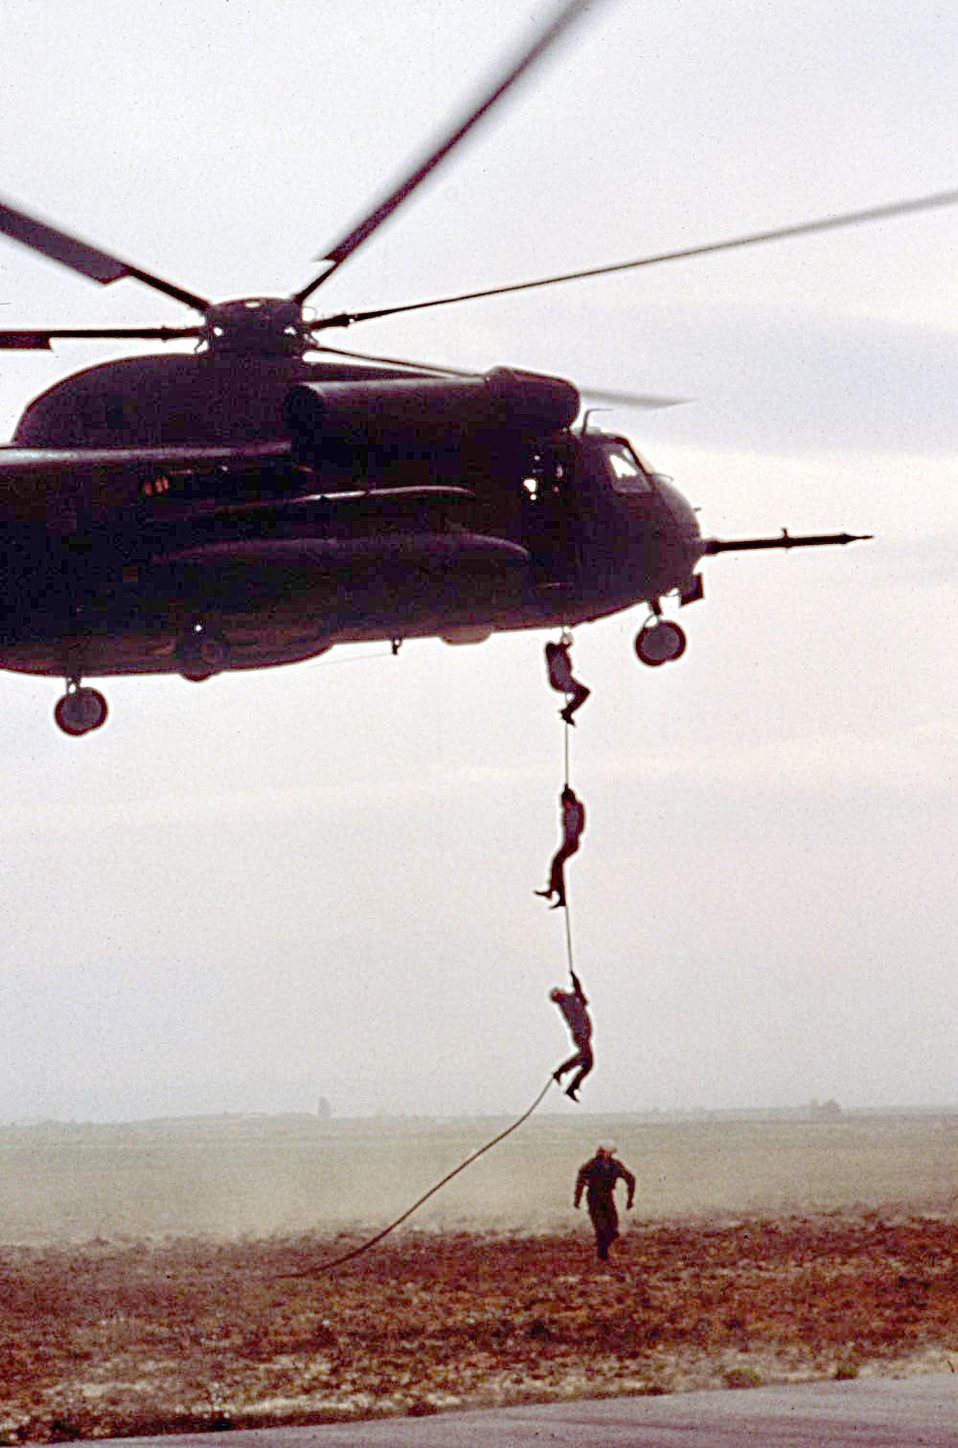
Pararescuemen do a fast rope from a hovering HH-53

Pararescuemen do a